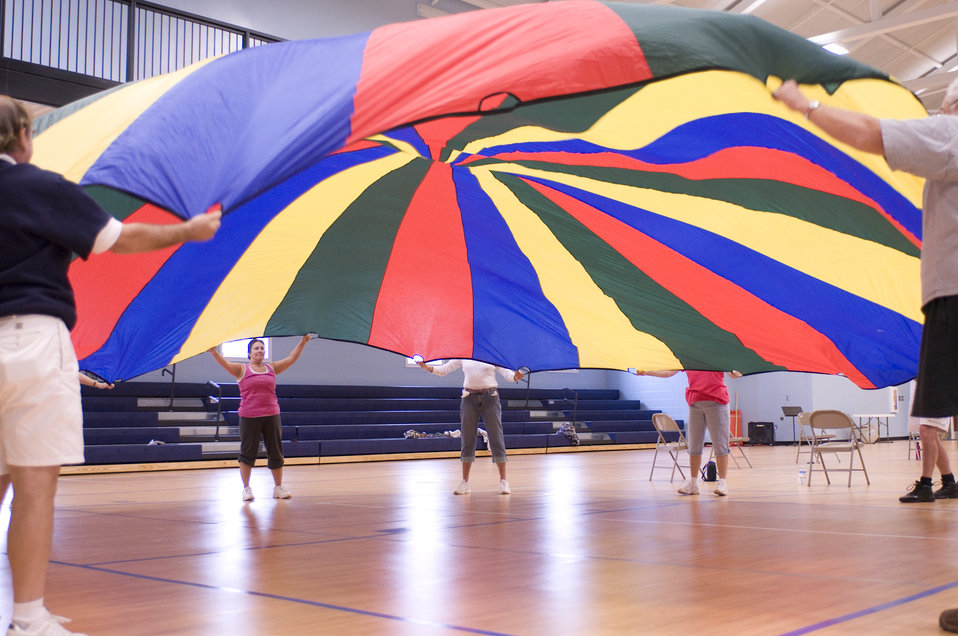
The older individuals pictured here on the wooden floor of an indoor basketball court, were participating in an exercise class consisting of stretching, and aerobic repetitive motion movements. In this particular view, the group members were working the muscles of their shoulders and arms by raising their outstretched arms over their heads then back down again, repeating this motion, while they held on to a large multicolored tarpaulin, which had been equipped with handles along its rim.